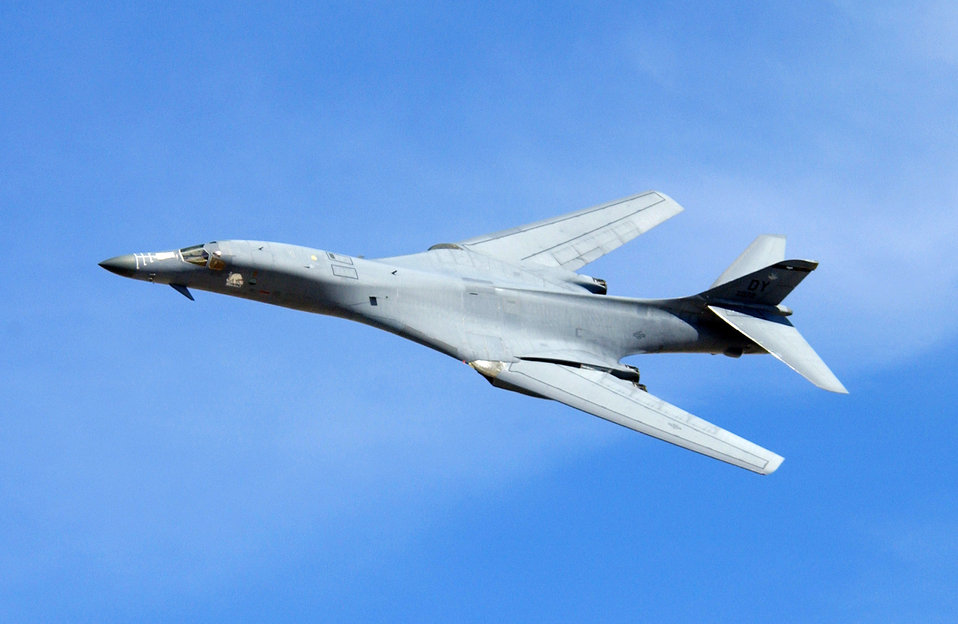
Bomber power

INDIAN SPRINGS AIR FORCE AUXILIARY FIELD, Nev. - A B-1 Lancer performs a fly-by during a firepower demonstration here recently. The bomber is from the 7th Bomb Wing at Dyess Air Force Base, Texas.